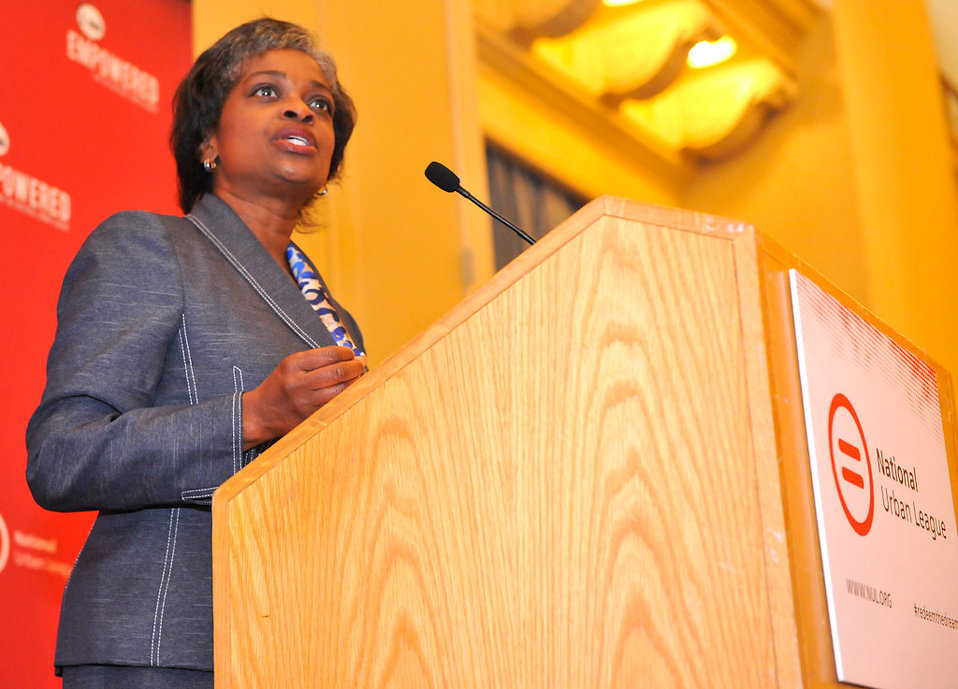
National Urban League Joint Leadership Luncheon 7-24-2013

Chairwoman Clyburn speaking at National Urban League Joint Leadership Luncheon.